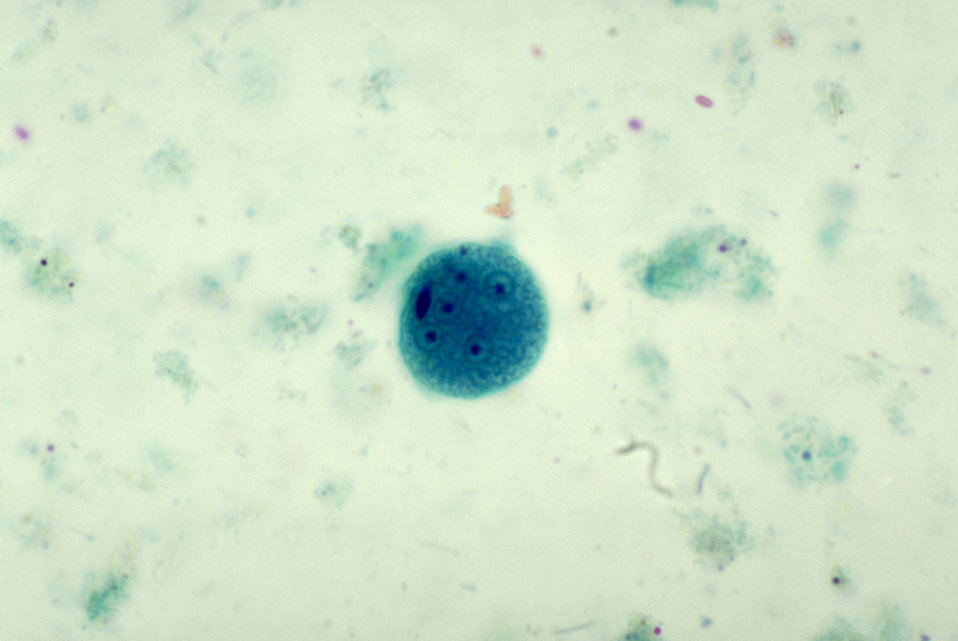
This photomicrograph depicted a mature Entamoeba coli cyst, containing five nuclei, and a visible chromatoid body.